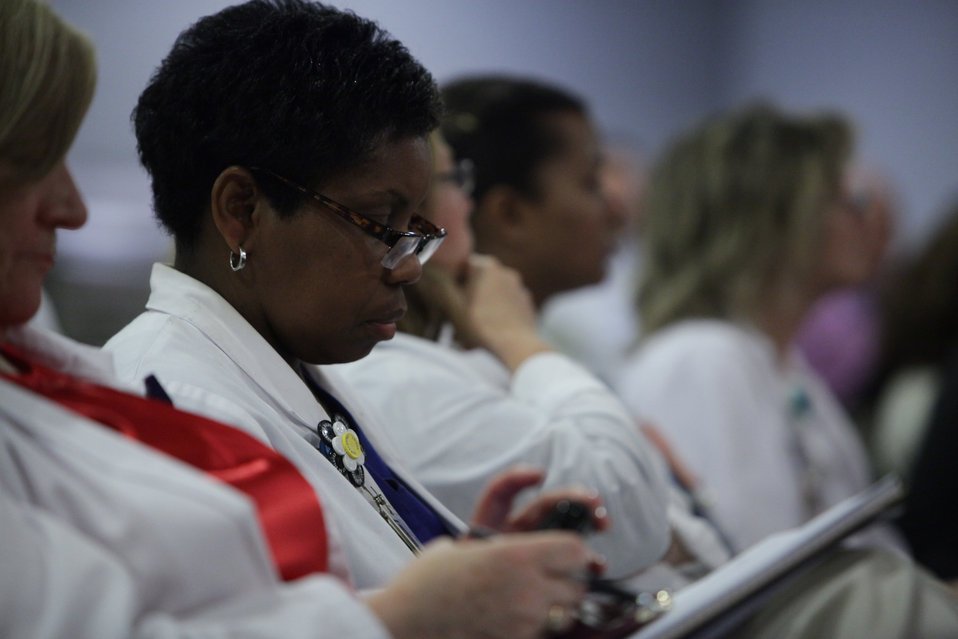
GW University Hospital Staff Taking Notes During FCC Chairman's Speech on MBANs

GW University Hospital staff taking notes while listening to FCC Chairman Genachowski speak about MBANs at GW University Hospital in Washington, DC.

May 17, 2012.